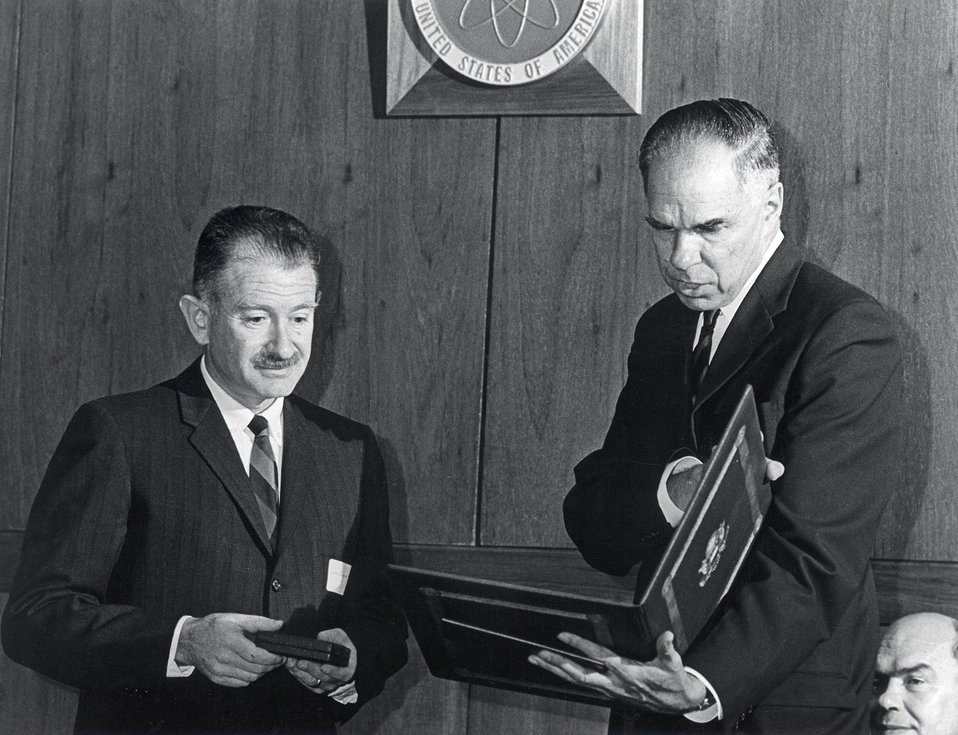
E. O. Lawrence Awards, 1967. Dr. Mortimer M. Elkind, Chairman Seaborg.